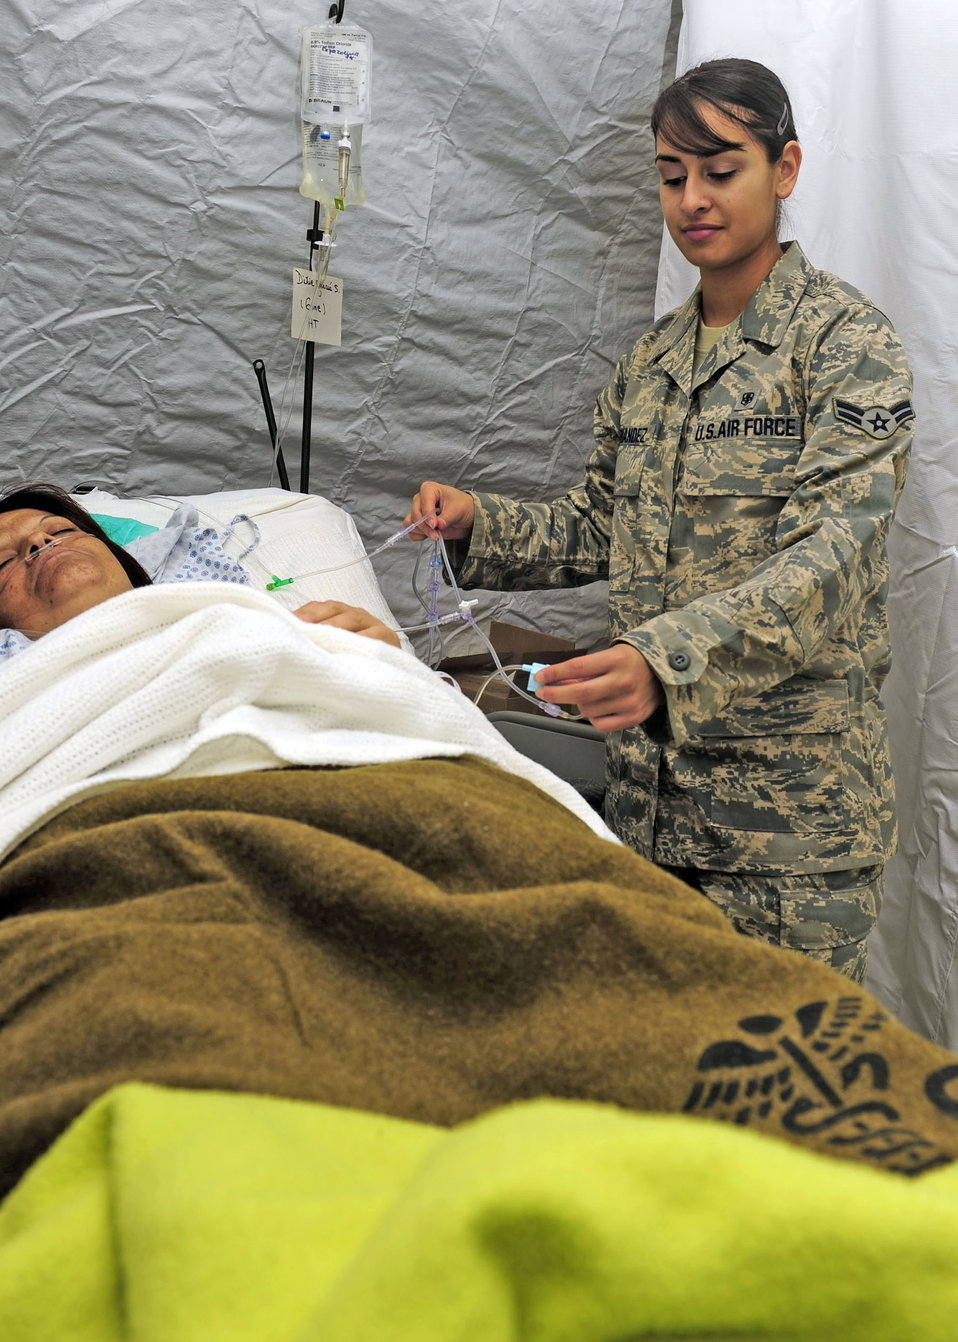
Bridging the language gap

Airman 1st Class Yadira Fernandez adjusts a patient's intravenous line at an expeditionary hospital March 17, 2010, in Angol, Chile. Airman Fernandez is an aerospace medical technician also working as a translator for the Air Force Expeditionary Medical Support team here. She is deployed from the 59th Medical Inpatient Squadron at Lackland Air Force Base, Texas.